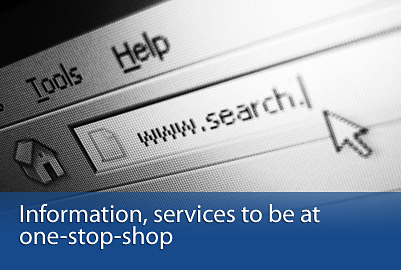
U.S. Air Force